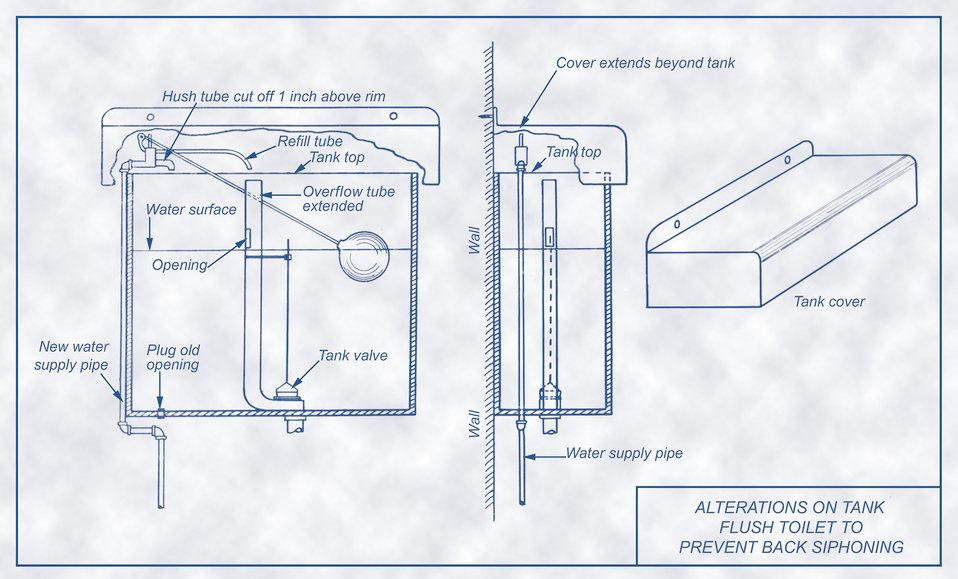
This historic 1941 diagram, which had been digitally enhanced and colorized, illustrated a method of altering tank-type flush toilets, in order to prevent "back-siphoning". Back-siphoning is the sudden loss of pressure within a plumbing system that could allow dirty water to be sucked into the supply pipes, which would contaminate the water system's clean water supply. Such a phenomenon could involve just the plumbing in a single house, if it was on its own well, or it could occur inside a municipal water system.